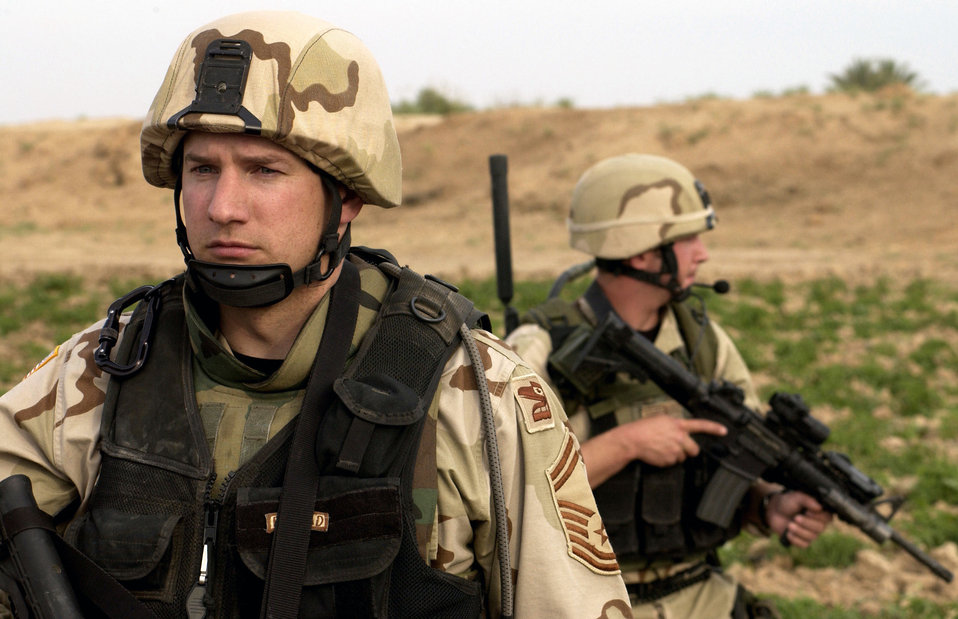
On patrol

BALAD AIR BASE, Iraq -- Senior Master Sgt. Tim Tyvan patrols an area here April 26. He is a tactical air control party Airman from the 116th Air Support Operations Squadron.